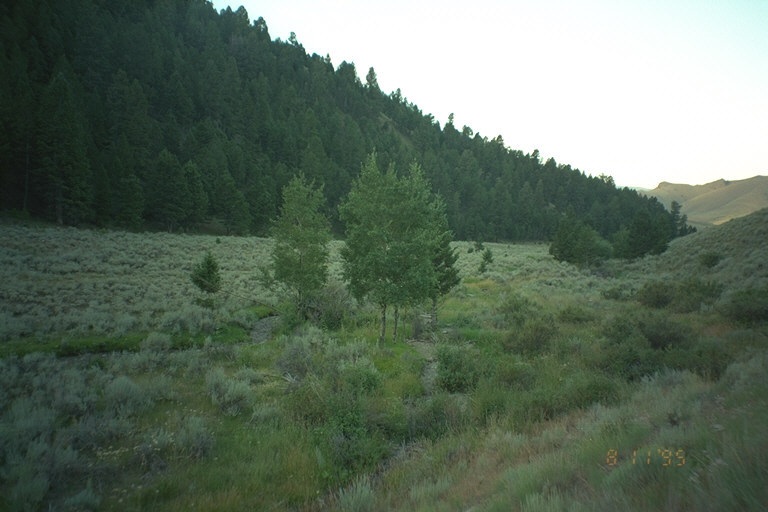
Riparian area Public Lands Salmon Field Office UCSC Upper Columbia Salmon Clearwater District